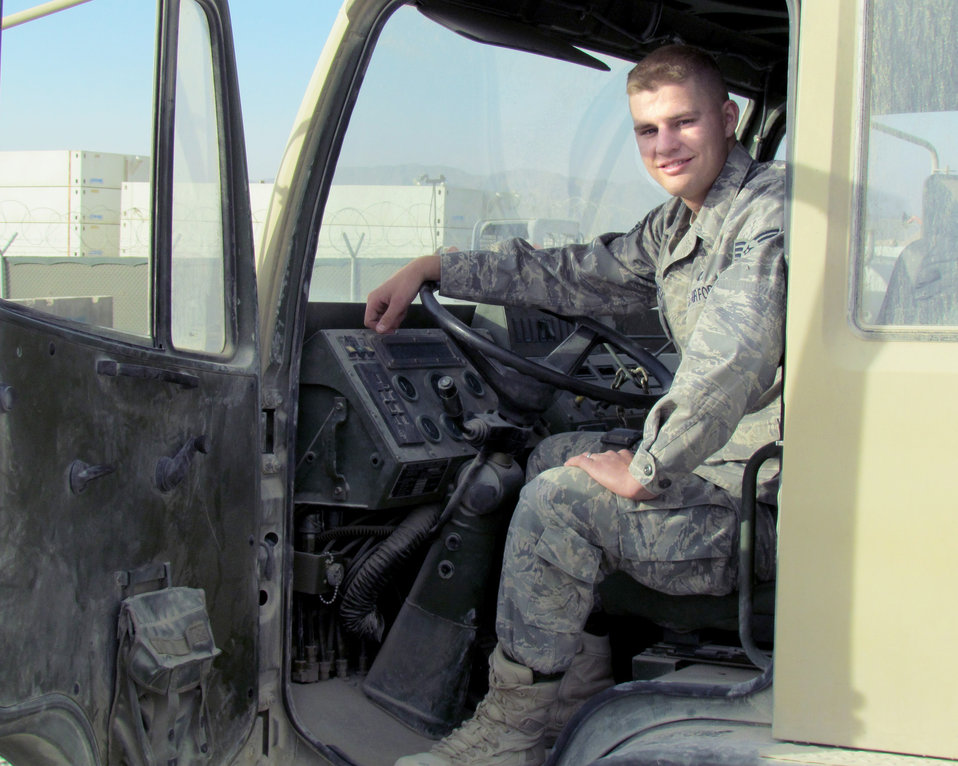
Airman saves seizing Soldier

Senior Airman Jesse Cornell performed self aid and buddy care on a Soldier who was suffering from a seizure April 15, 2011. Airman Cornell is assigned to the 647th Civil Engineer Squadron.